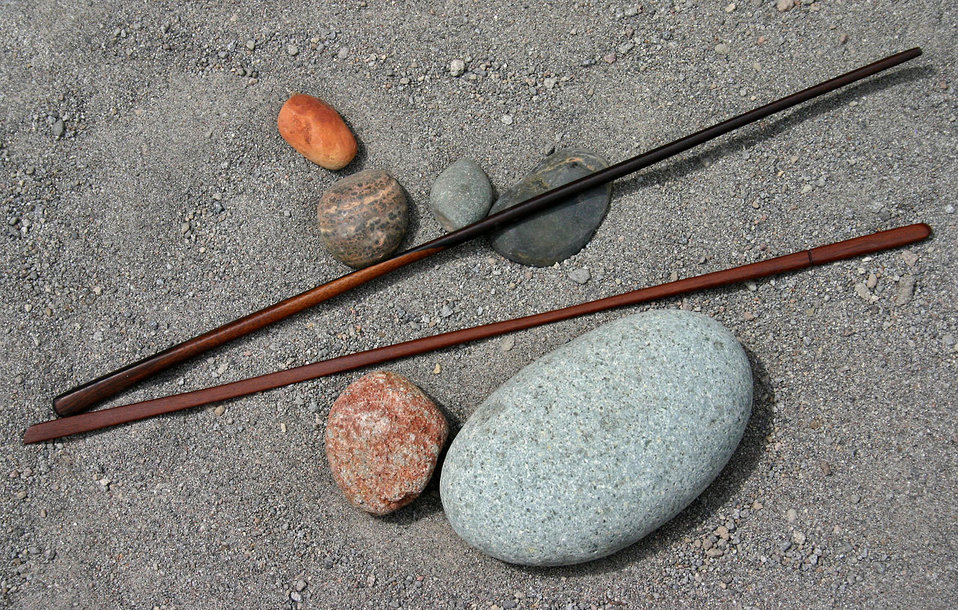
Sticks 'n stones

Carved wooden sticks and assorted stones.